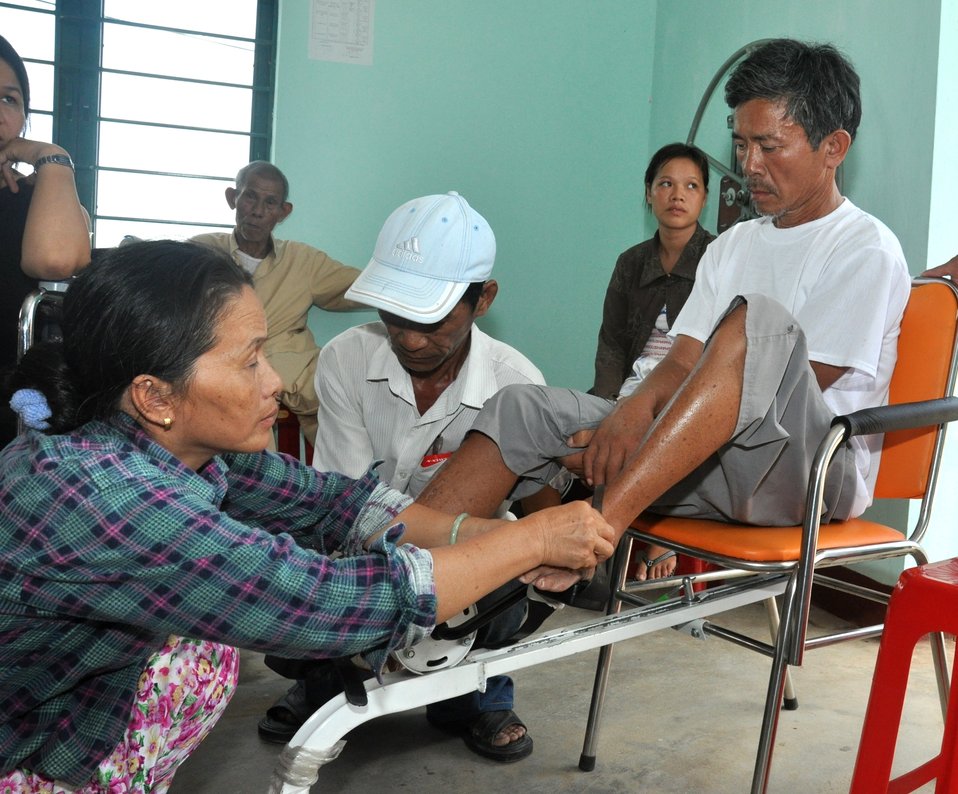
USAID supports a community rehabilitation unit in Danang.

Danang, June 10, 2013.